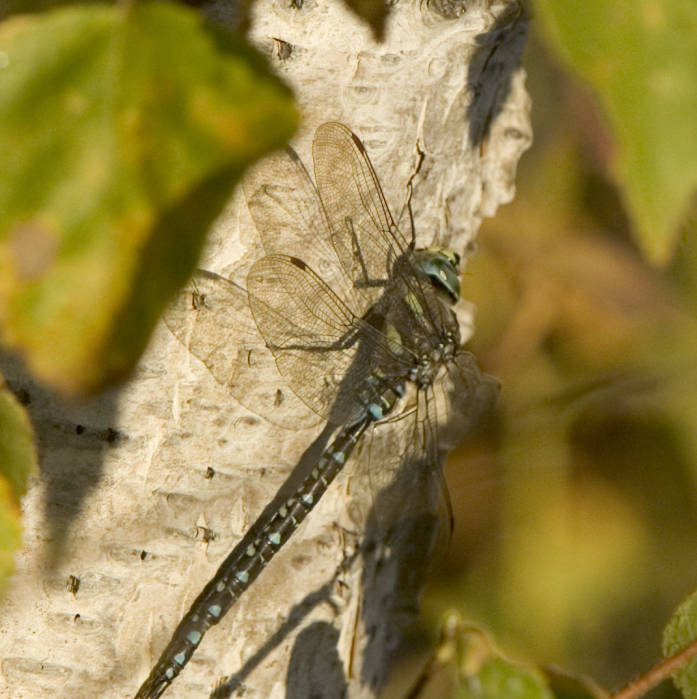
Dragonfly at Kanuti National Wildlife Refuge